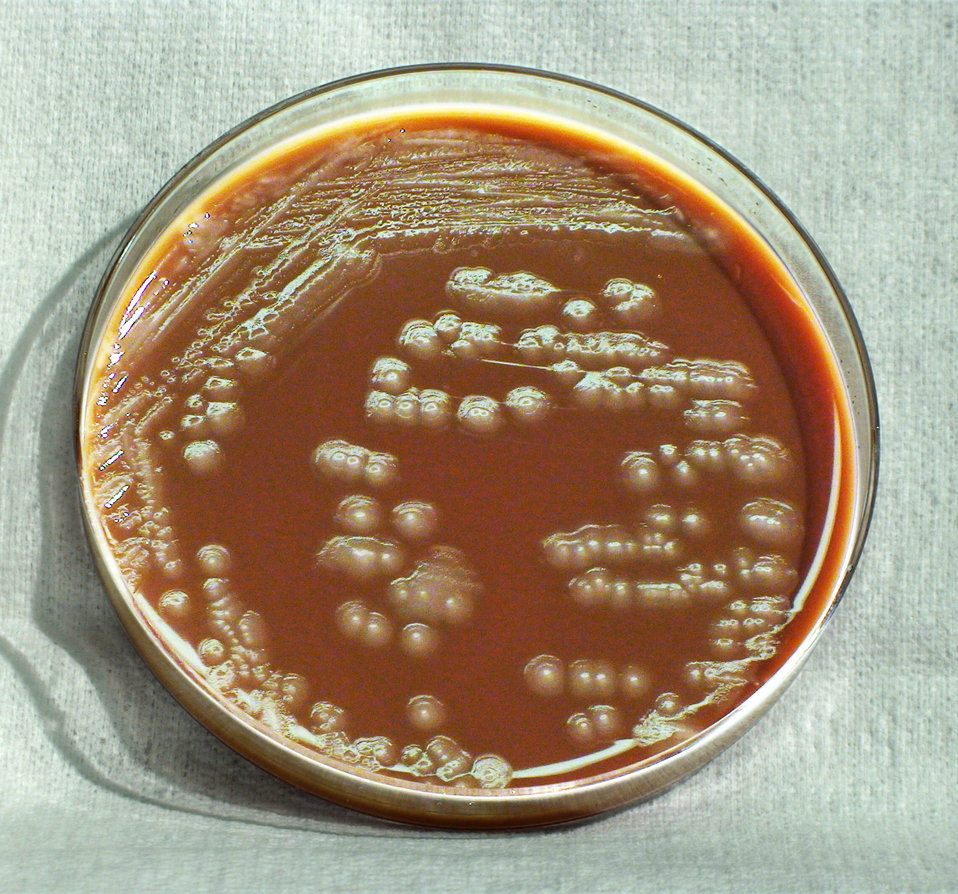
This photograph depicts the colonial morphology displayed by Gram-negative Yersinia pestis bacteria, which was grown on a medium of chocolate agar, for a 72 hour time period, at a temperature of 37�C. Yersinia pestis is pathogenic towards humans, and is responsible for causing the disease known as plague. See also PHIL 12468 for the appearance of Y. pestis colonies grown on the same medium, but for both a lesser time period (48hr), and at a lesser temperature (25�C); PHIL 12469 and 12470, for Y. pestis colonies grown on the same medium, and for the same time period, but at a lesser temperature (25�C); PHIL 12473 displaying growth on the same medium, but at a lesser temperature (25�C), and for only one-third time period (24hr).